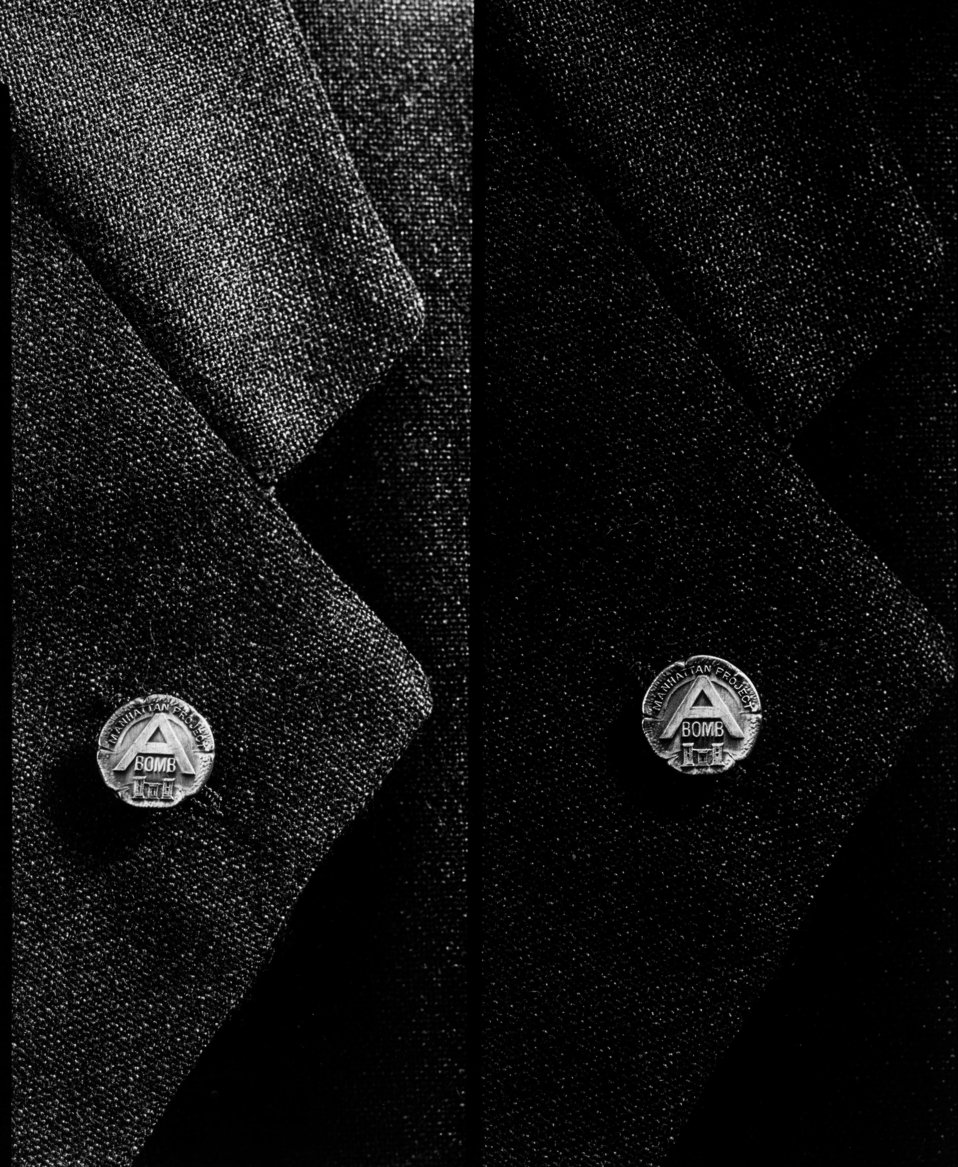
Army activity at Oak Ridge